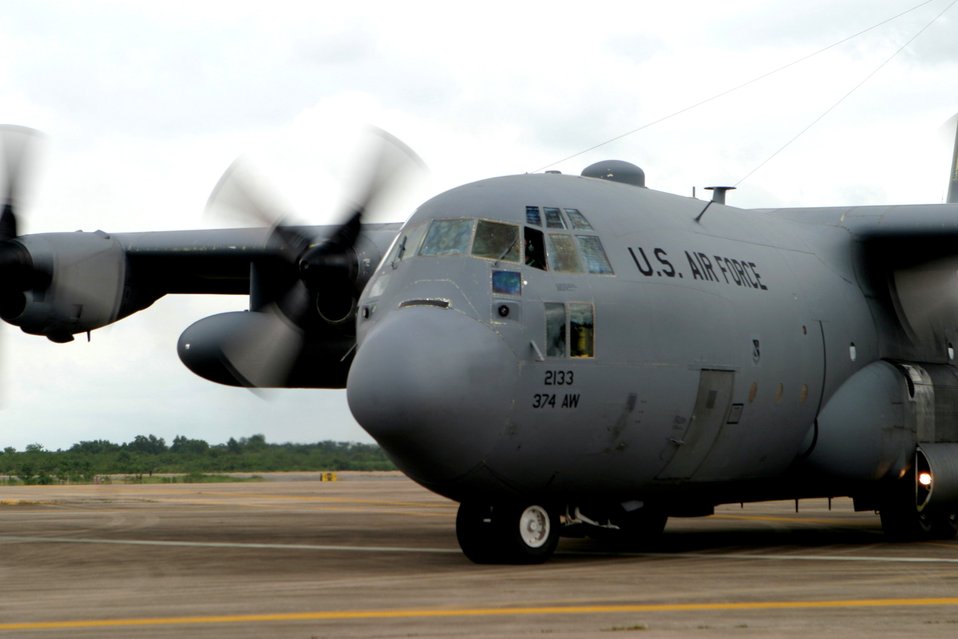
Aircrews stand by to continue Burma relief mission

A C-130 Hercules loaded with humanitarian supplies takes off from Utapao Thai Royal Navy Air Base in Thailand to deliver relief supplies to victims of Cyclone Nargis in Burma. The Air Force is part of the Joint Task Force Caring Response, a multi-service Humanitarian Assistance and Disaster Relief effort for Burmese citizens devastated by the recent cyclone.